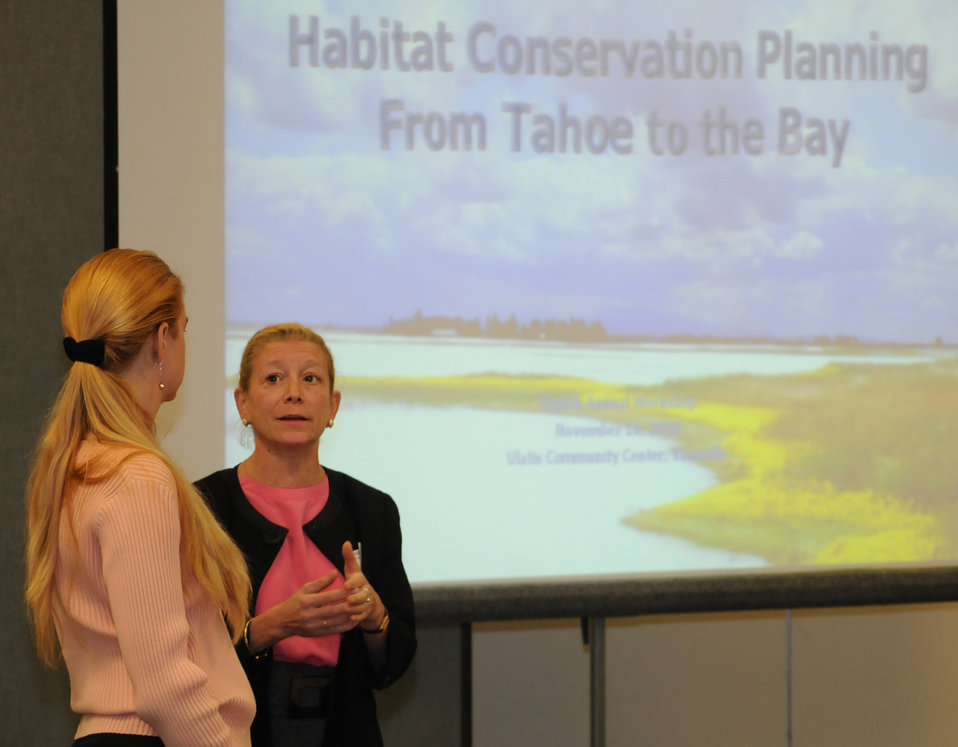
VACAVILLE, Calif. (Nov. 16, 2010) – Kate Dadey (right), a regulatory branch manager with the U.S. Army Corps of Engineers Sacramento District, speaks to an attendee during the 8th Annual Habitat Conservation Planning Workshop here Nov. 16. Dadey and Sacramento District regulatory project manager Mary Pakenham-Walsh were on hand to explain how the Corps is streamlining its application process to develop wetland areas to maximize the benefit of local habitat conservation plans. “It’s good for the environment, it’s good for developers and it’s easier and faster for everybody,” Dadey said. The workshop brought together resource conservation planners and stakeholders from Lake Tahoe to the San Francisco Bay area to discuss ways to improve conservation of endangered species while allowing appropriate and compatible economic growth. Under the Clean Water Act, the Corps of Engineers is responsible for regulating activities that could affect waters of the United States.